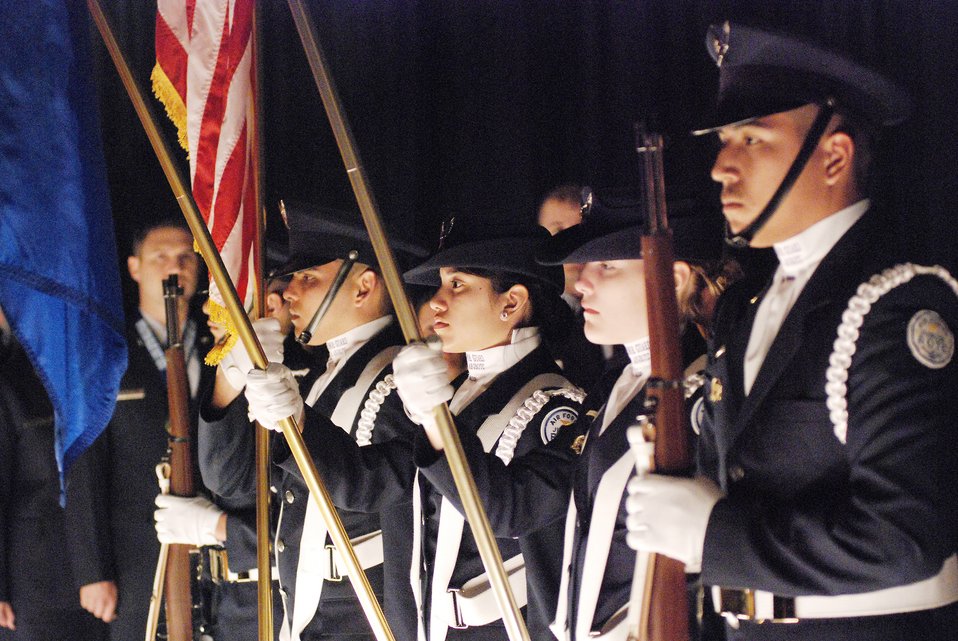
Attention!

A local Junior ROTC flight posts the colors as Operation Blue Suit XXXI starts at Randolph Air Force Base, Texas. Blue Suit is a week-long event hosted by the Air Force Recruiting Service to honor the top 12 recruiters in the nation.